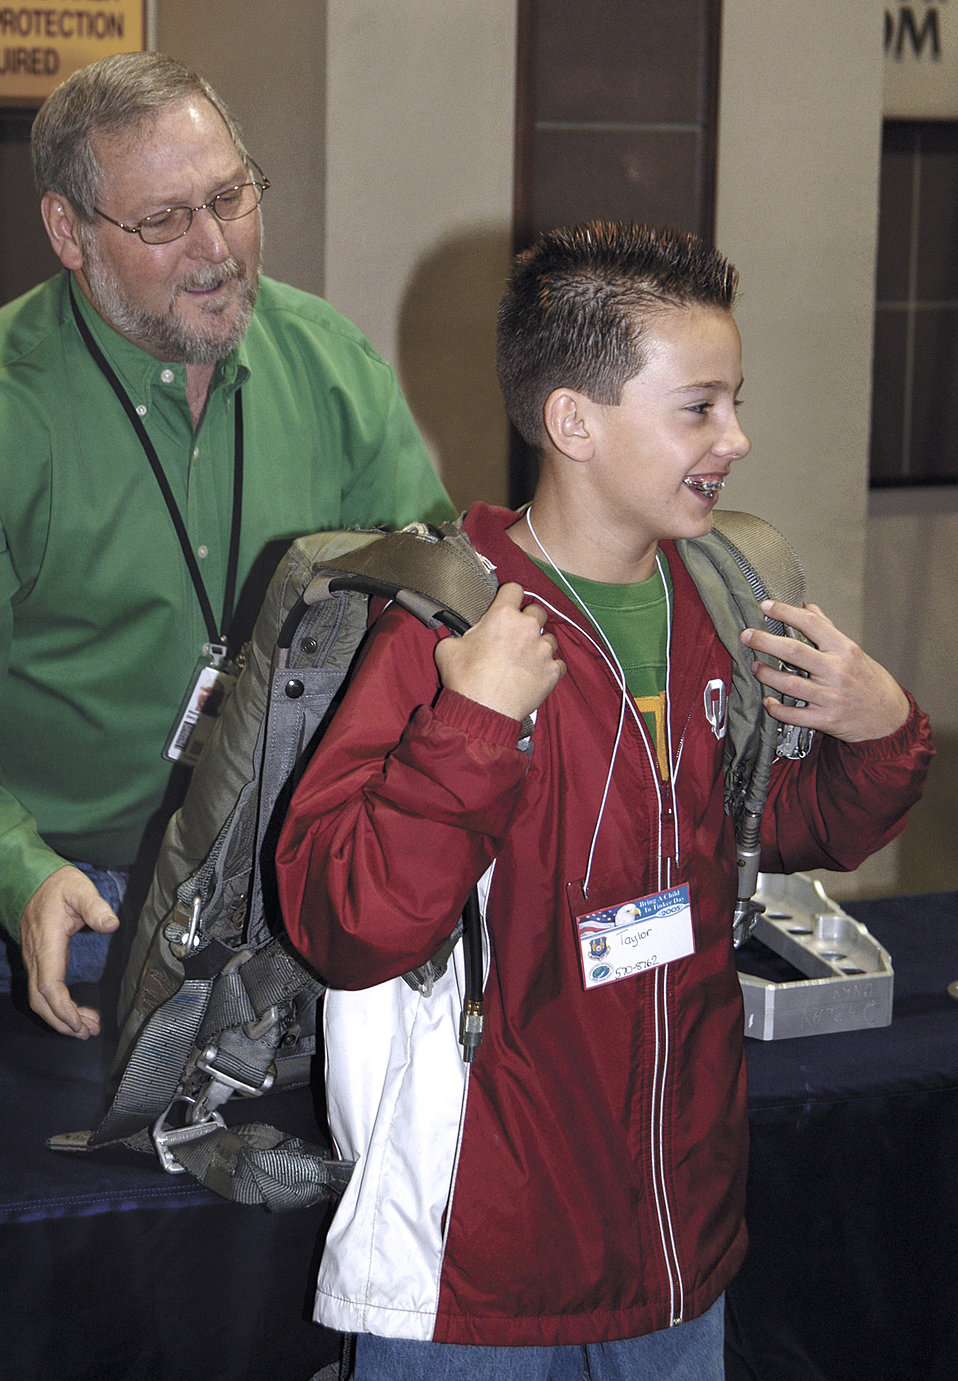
Through the eyes of a child

TINKER AIR FORCE BASE, Okla. -- Gary Wood, a parachute shop fabric worker, helps 12-year-old Taylor Welchel feel the weight of a parachute during a Bring a Child to Tinker event. Taylor, whose dad, Jason Welchel, is a pneudraulics fuel systems mechanic, thought the parachute